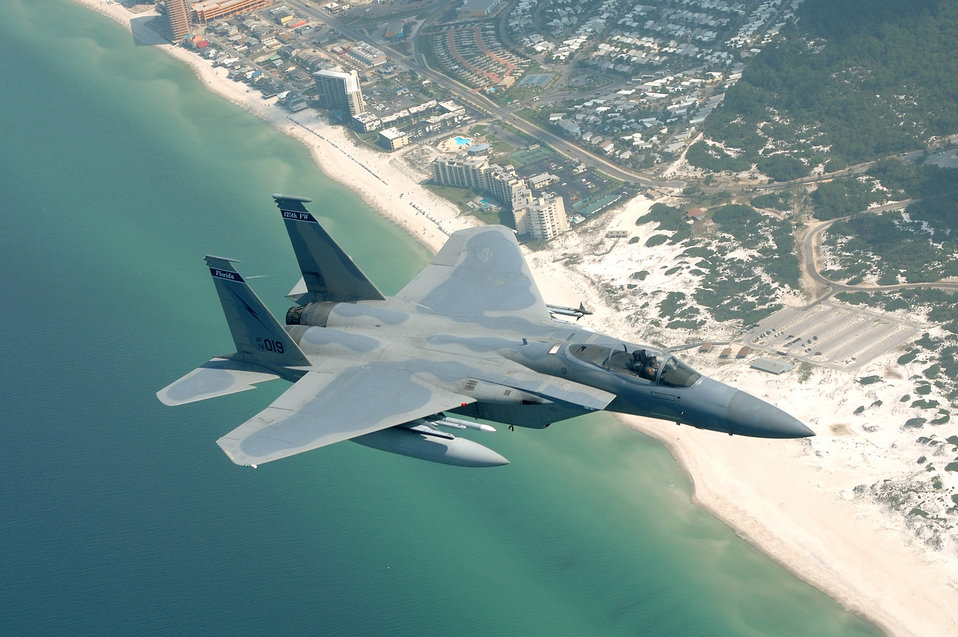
Beach Eagle

OVER PANAMA CITY, Fla. -- An F-15 Eagle flys over the beach on approach to Tyndall Air Force Base, Fla., after a mission during a weapons systems evaluation program sortie May 19. The Eagle is assigned to the Florida Air National Guard's 125th Fighter Wing.